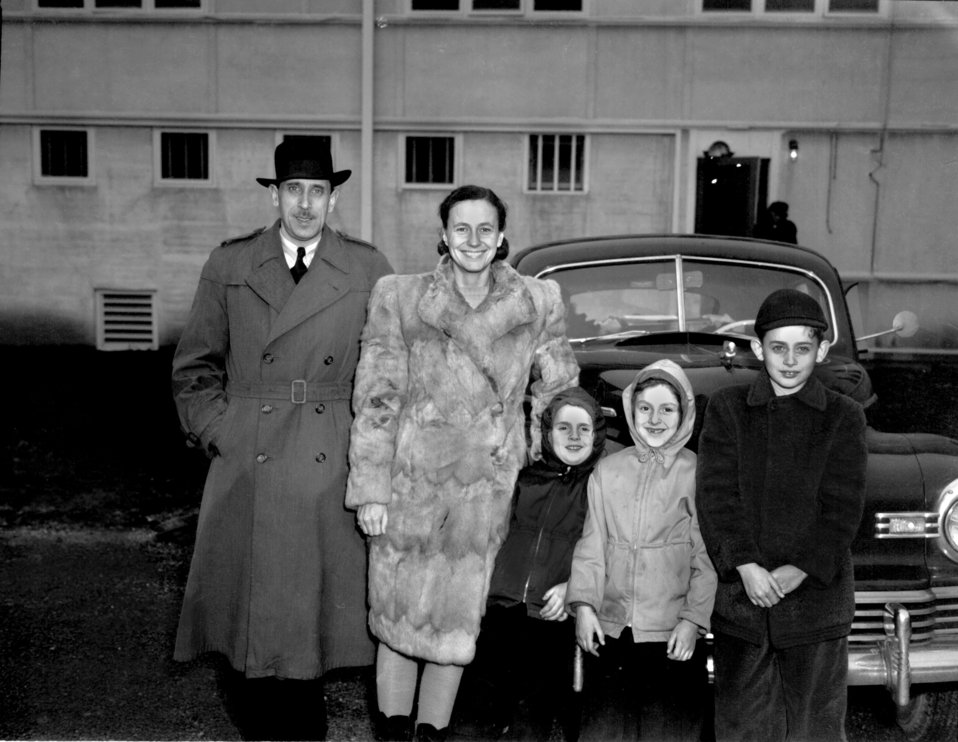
Family Portrait Oak Ridge

3219-2 DOE photo Ed Westcott 1-2-1947 Oak Ridge Tennessee